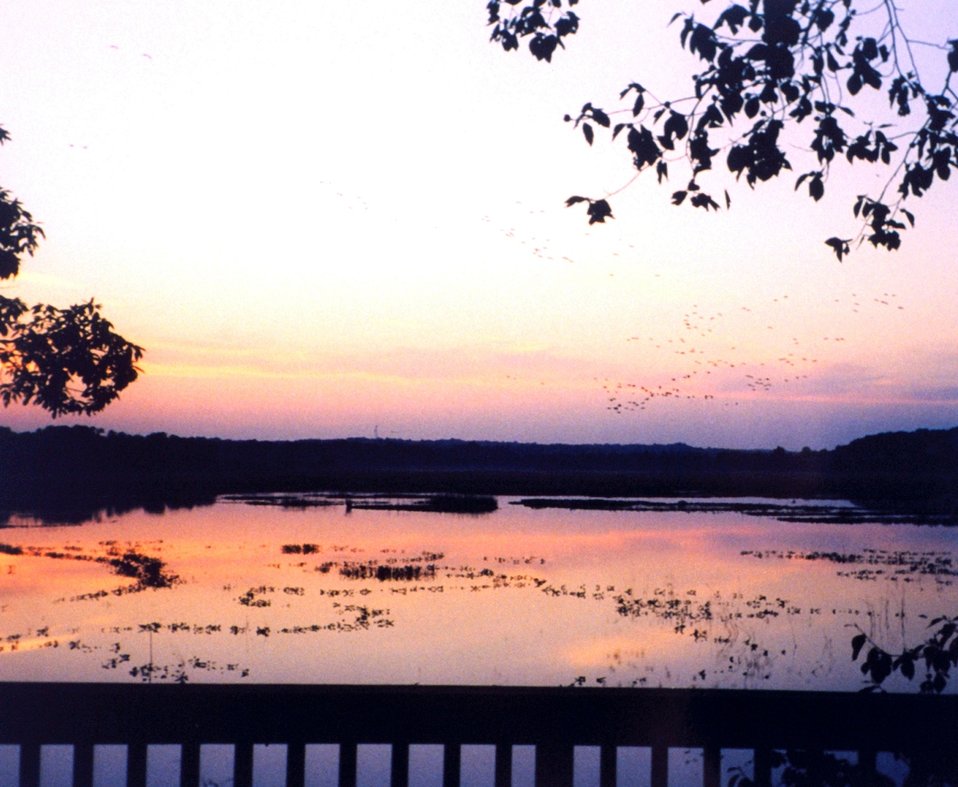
Canada geese flying into the Jug Bay area at sunset.